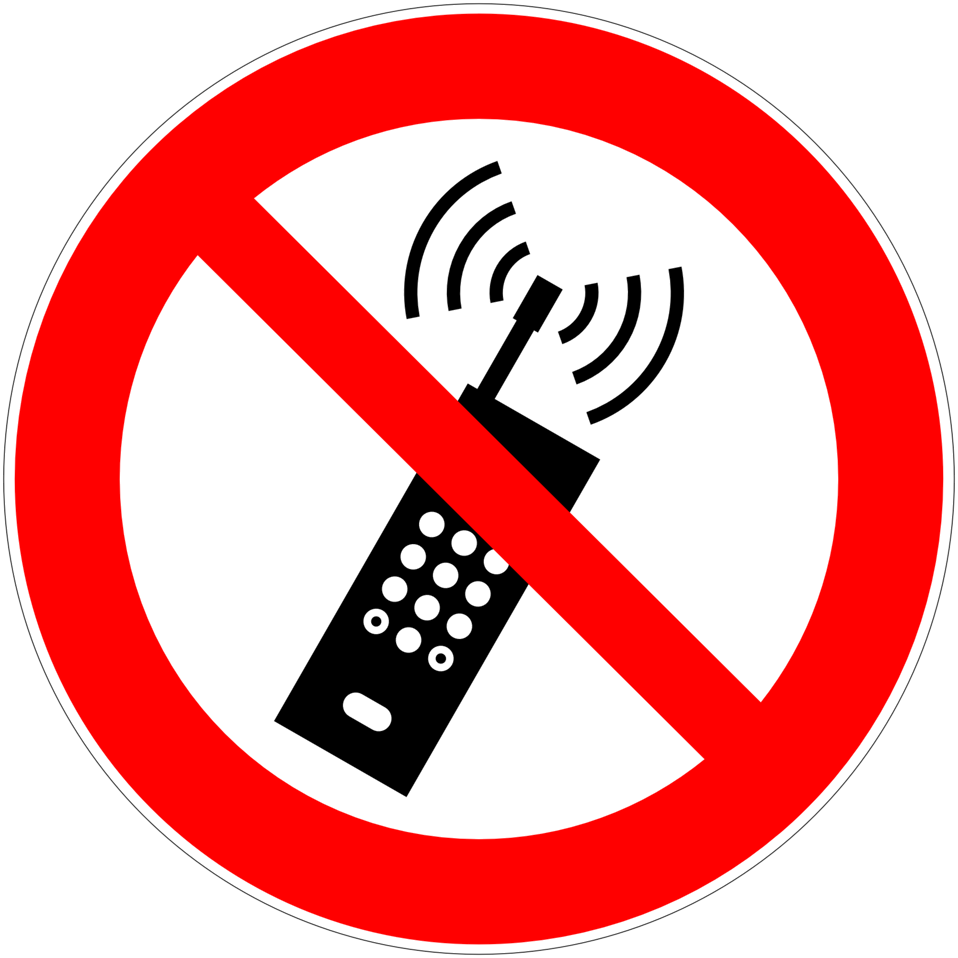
Deutsch: Mobilfunk verboten, Verbotszeichen D-P018 nach DIN 4844-2 Do not use wireless communication devices, prohibition sign D-P018 according to German standard DIN 4844-2